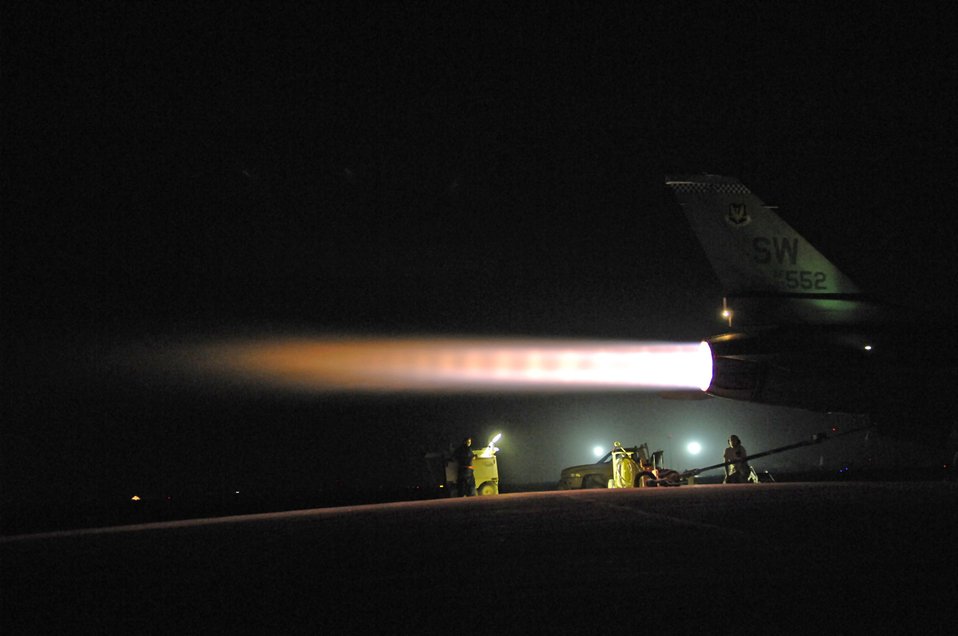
Gentlemen, start your engines!

Airmen monitor an F-16 Fighting Falcon as it goes into full afterburner July 16 at Joint Base Balad, Iraq. Senior Airman Graham Willis and Staff Sgt. Michael Danigel communicate back and forth from the cockpit to ground comparing the readings of cockpit computers with the physical responses of the F-16. Airman Willis and Sergeant Danigel are 77th Aircraft Maintenance Unit engine mechanics deployed from Shaw Air Force Base, S.C.